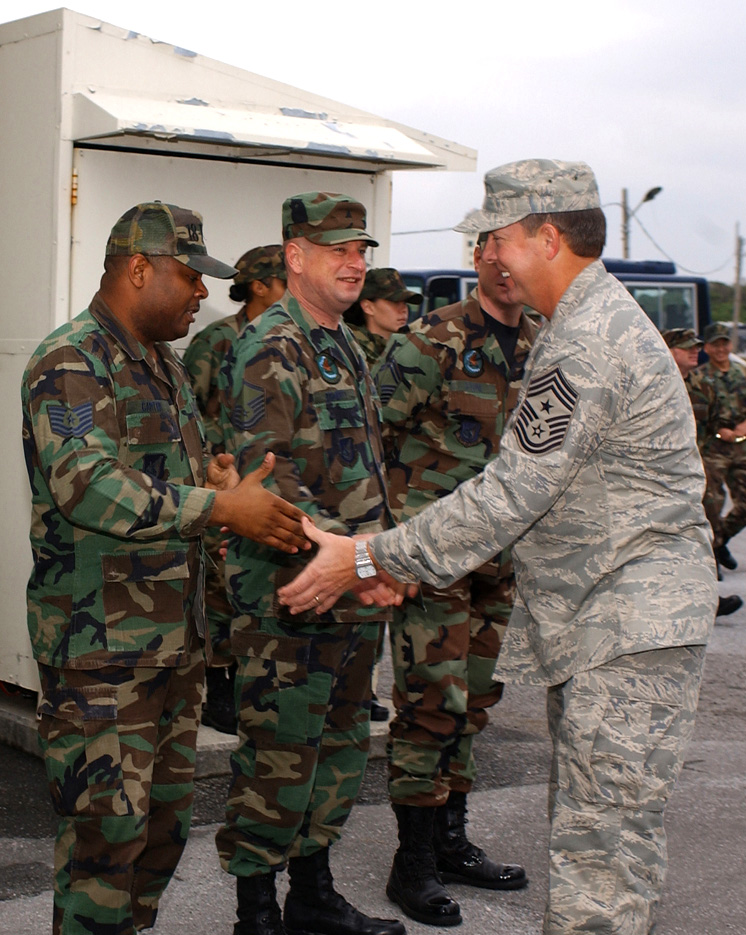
Chief McKinley selected as 15th CMSAF

Chief Master Sgt. Rodney J. McKinley, shown here shaking hands with Airmen, has been selected as the 15th chief master sergeant of the Air Force by Air Force Chief of Staff Gen. T. Michael Moseley. He will replace Chief Master Sgt. of the Air Force Gerald R. Murray on July 1, following Chief Murray's retirement June 30. Chief McKinley currently serves as the command chief master sergeant for Pacific Air Forces.